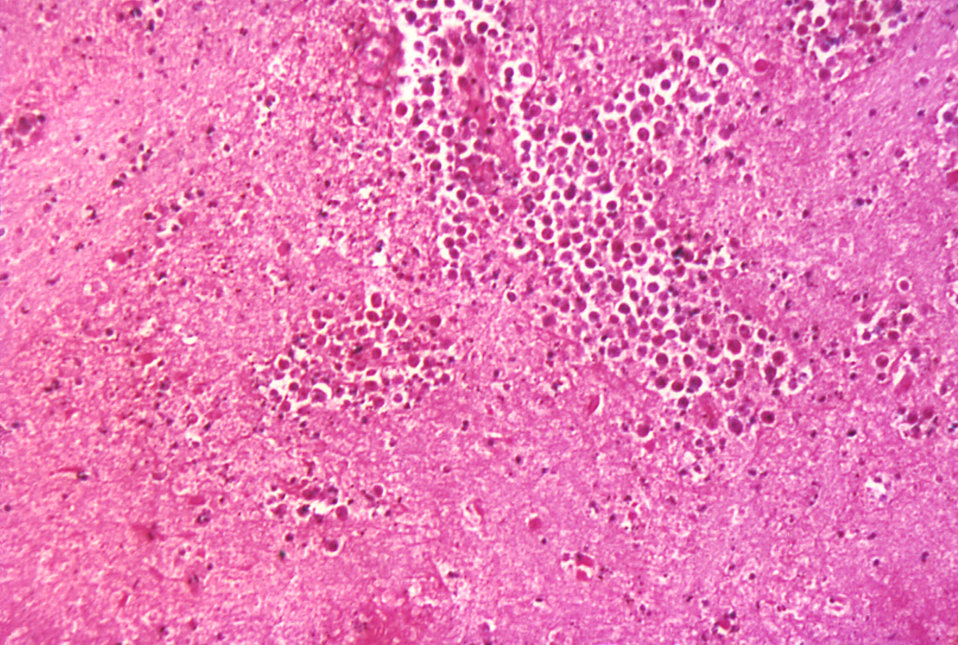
This photomicrograph of a brain tissue specimen depicts the cytoarchitectural changes associated with a free-living, Naegleria fowleri, amebic infection. When free-living amebae infect the brain or spinal cord, the condition is known as primary amebic meningoenceohalitis, or PAM. Free-living amebae belonging to the genera Acanthamoeba, Balamuthia, and Naegleria are important causes of disease in humans and animals, though only one specie of Naegleria, Naegleria fowleri, causes disease in humans.